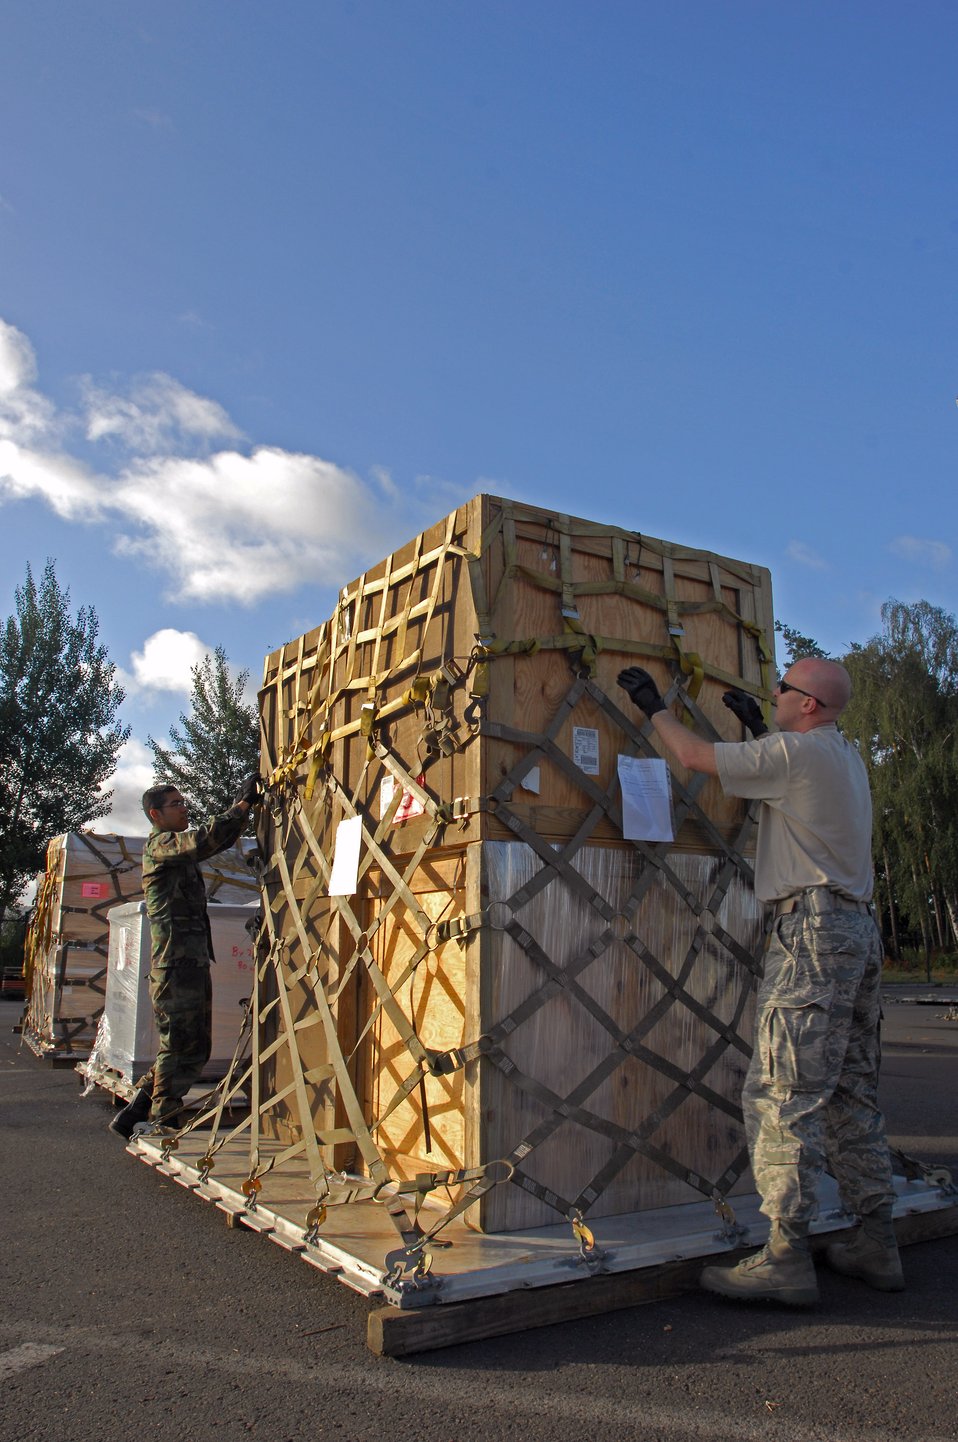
435th Logistics Readiness Squadron prepares for Georgia

Airman 1st Class Rogelio Munoz and Tech. Sgt. Warren Parson prepare cargo heading to the country of Georgia Aug. 13 at Ramstein Air Base, Germany. Both Airmen are assigned to the 435th Logistics Readiness Squadron.